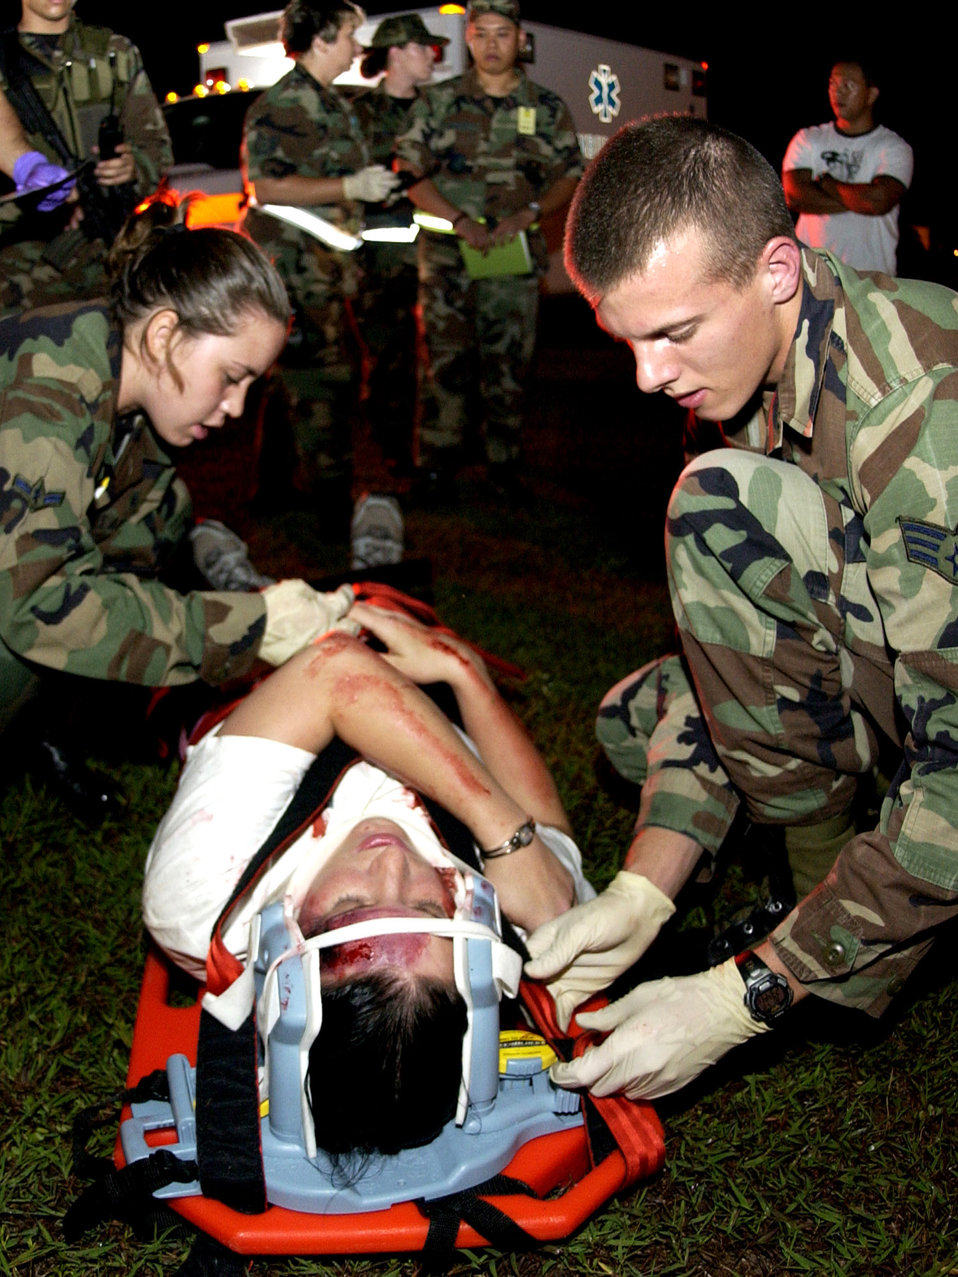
Exercise at Andersen

Airman Alina Mata and Senior Airman Stace Reading prepare to transport a person simulating the victim of a vehicle accident at Andersen Air Force Base, Guam, during the Beverly Palm 06-07 exercise on July 10. The exercise is held several times a year to sharpen the mobility and wartime capabilities of Airmen. The Airmen are assigned to the 36th Medical Operations Squadron.